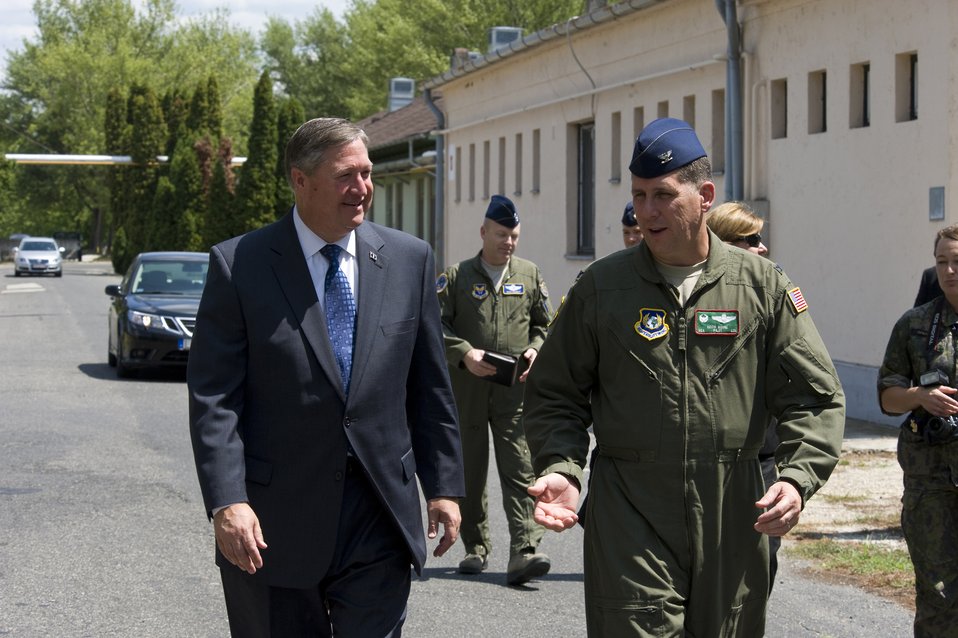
SecAF greets Airmen 3

Col. Keith Boone, commander of the Heavy Airlift Wing, talks with Secretary of the Air Force Michael Donley during a tour of Pápa Air Base, Hungary, July 11, 2012. The secretary visited the HAW to speak with Airmen about the direction of the Air Force, meet with them on the job and learn what's on their minds.